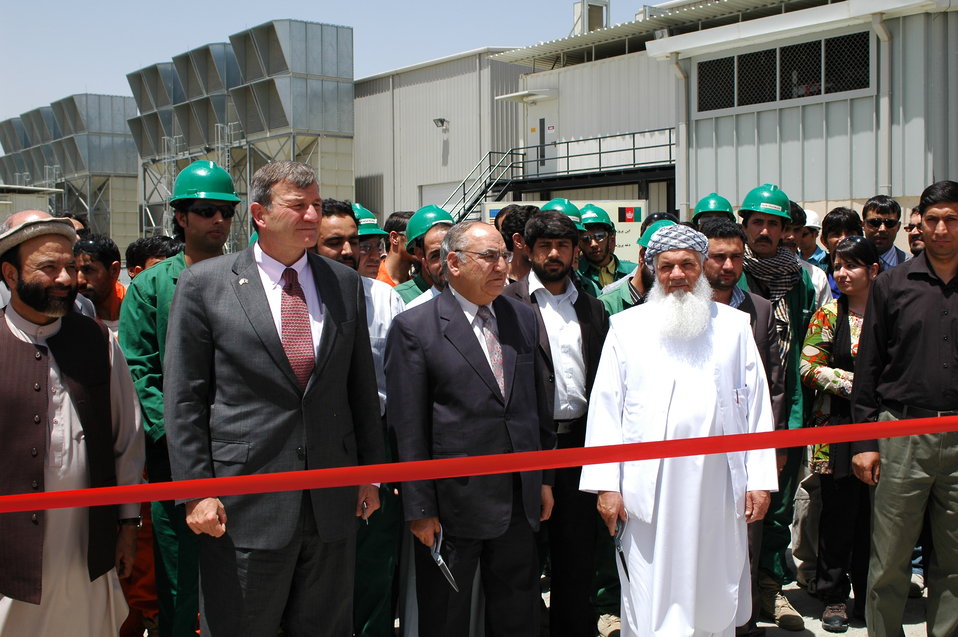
105 MW Tarakhil Power Plant Handover